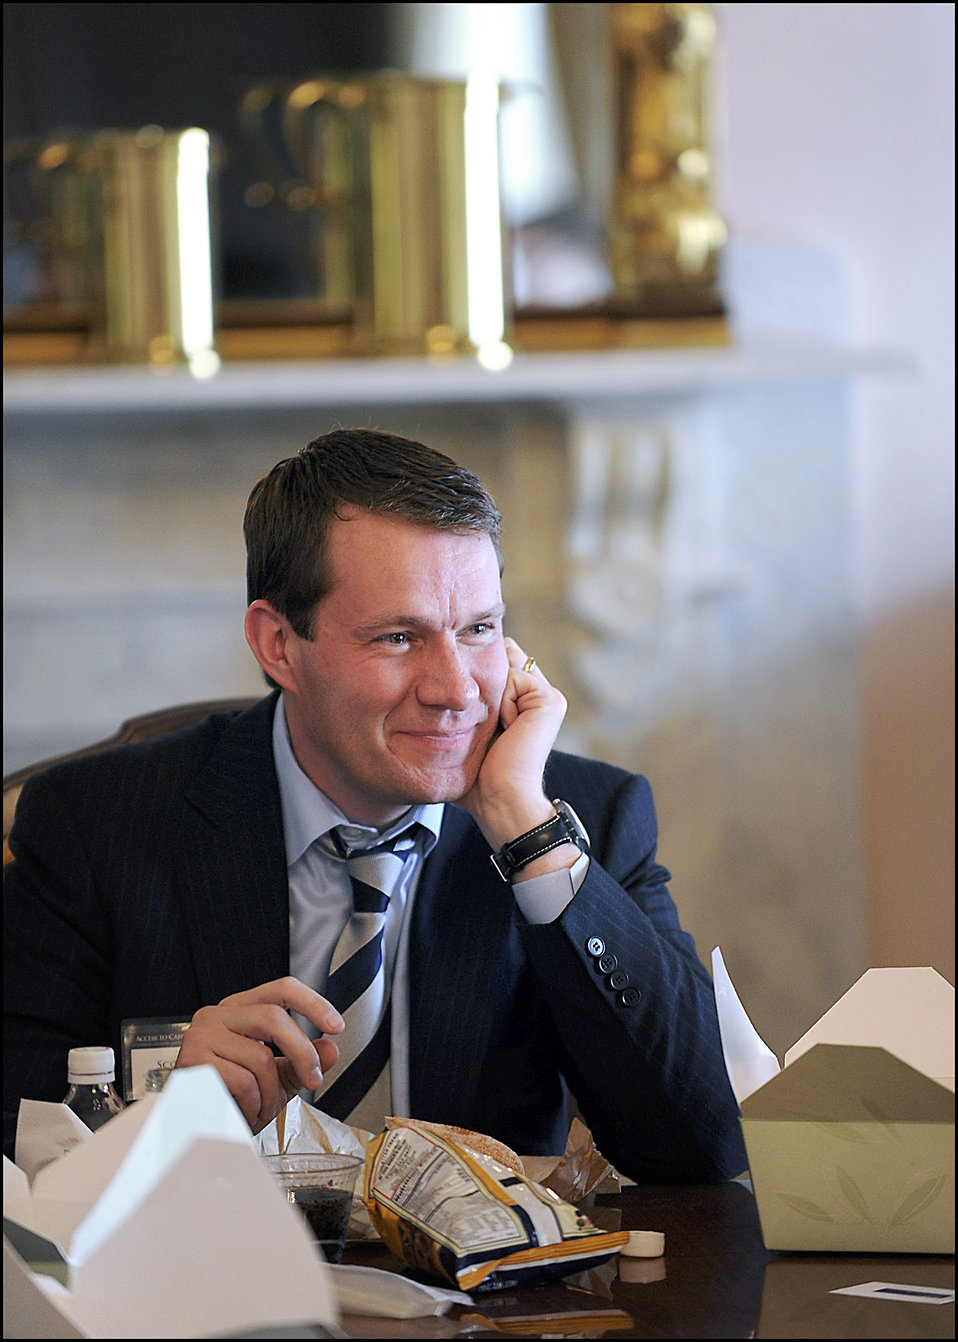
Access to Capital Conference

Scott Case, moderator for the conference’s second panel , participated in a breakout session focusing on 'Financing Small Cap companies: IPOs, Credit, and Alternative Liquidity Platforms.'